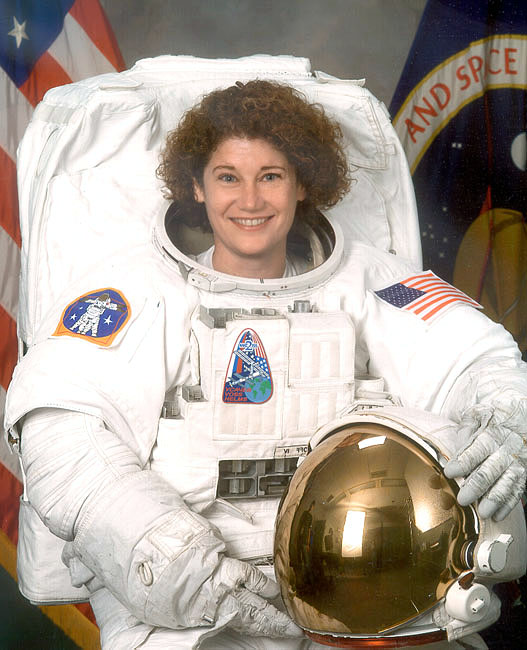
Helms

PETERSON AIR FORCE BASE, Colo. -- Col. Susan Helms was the first U.S. military woman in space in 1993, the first woman to inhabit the International Space Station in 2001, and she holds the world record, along with crewmate Army Col. Jim Voss, for the longest space walk of eight hours and 56 minutes, also in 2001. She is now the chief of the space control division at Air Force Space Command.